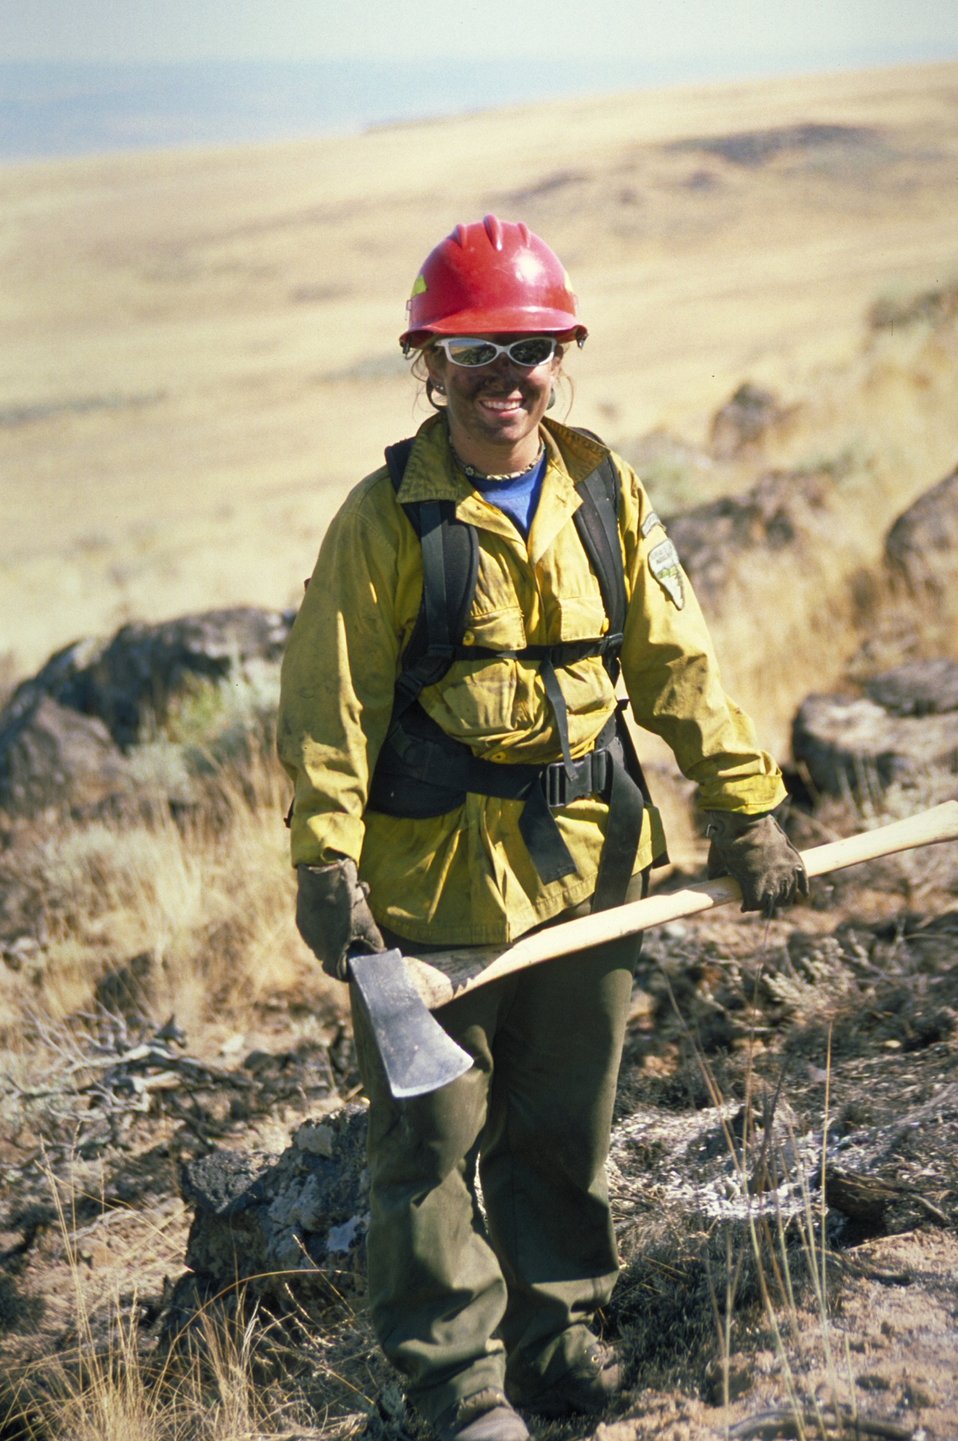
Fire Fighter with axe Fire Season 2000 Lower Snake River District LSRD